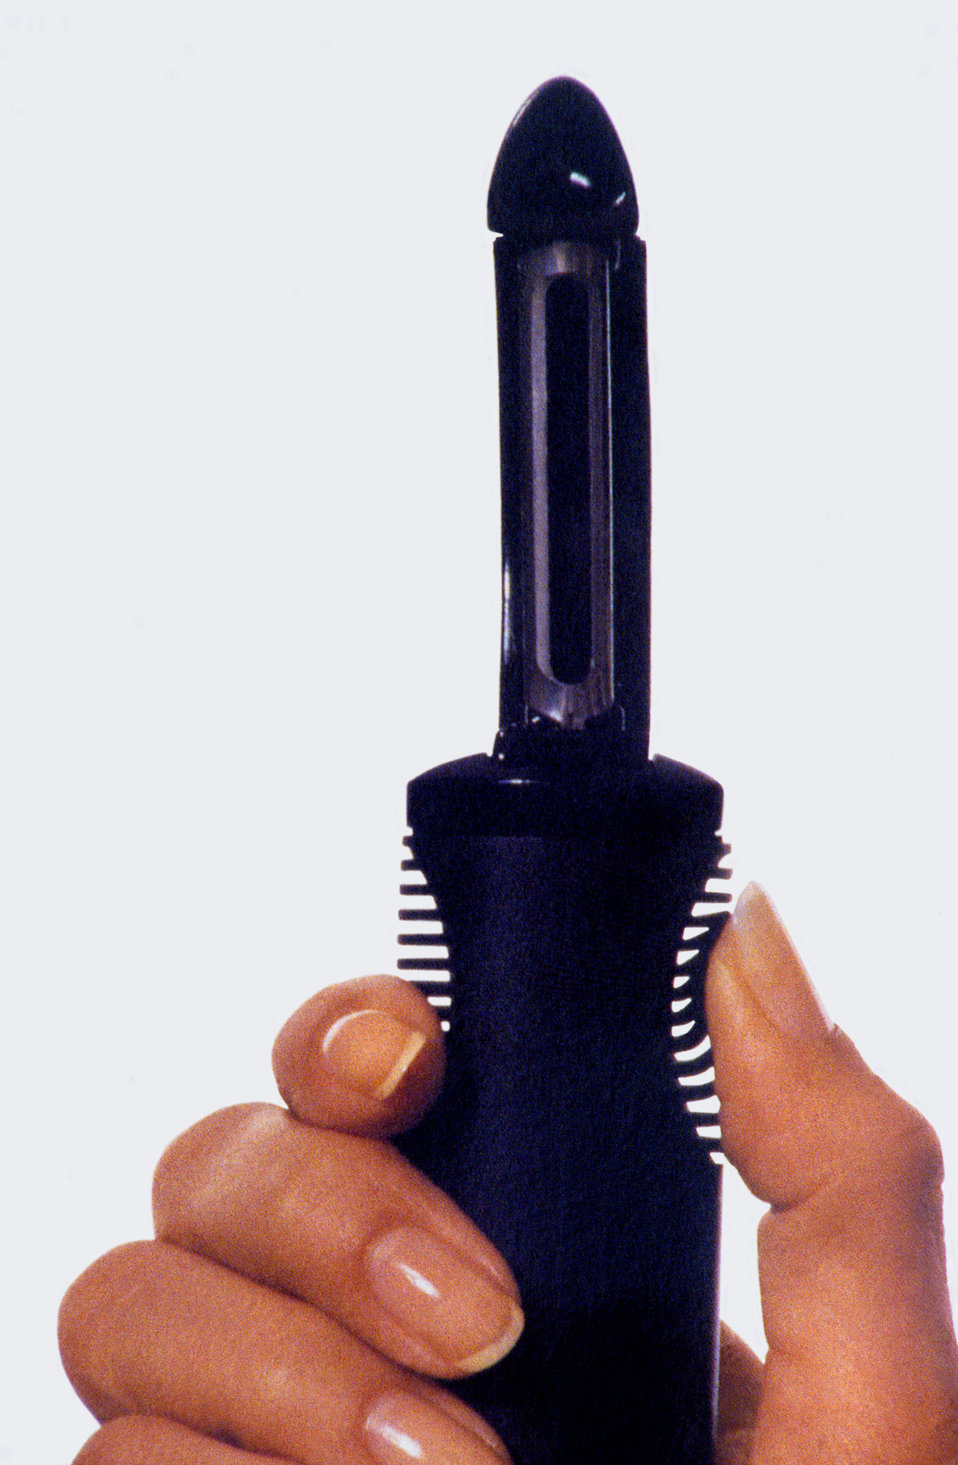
This 1996 photograph, is one of four PHIL images (see PHIL# 9118, 9119 and 9120), which depict the 'Good Grips�', larger, rubber-handled potato peeler with its smaller, all metal, hard edged cousin. The larger, softer, and more easily held peeler was designed with a greater degree of ergonomic user-friendliness in mind. It is able to comfortably fit a wider range of hand sizes with its softer, rubber handle. In this particular photograph, a woman's right hand is holding a rubber-handled peeler equipped with strategically-placed tactile bristles, illustrating how much easier it really is to grasp this kitchen implement than its all-metal counterpart.